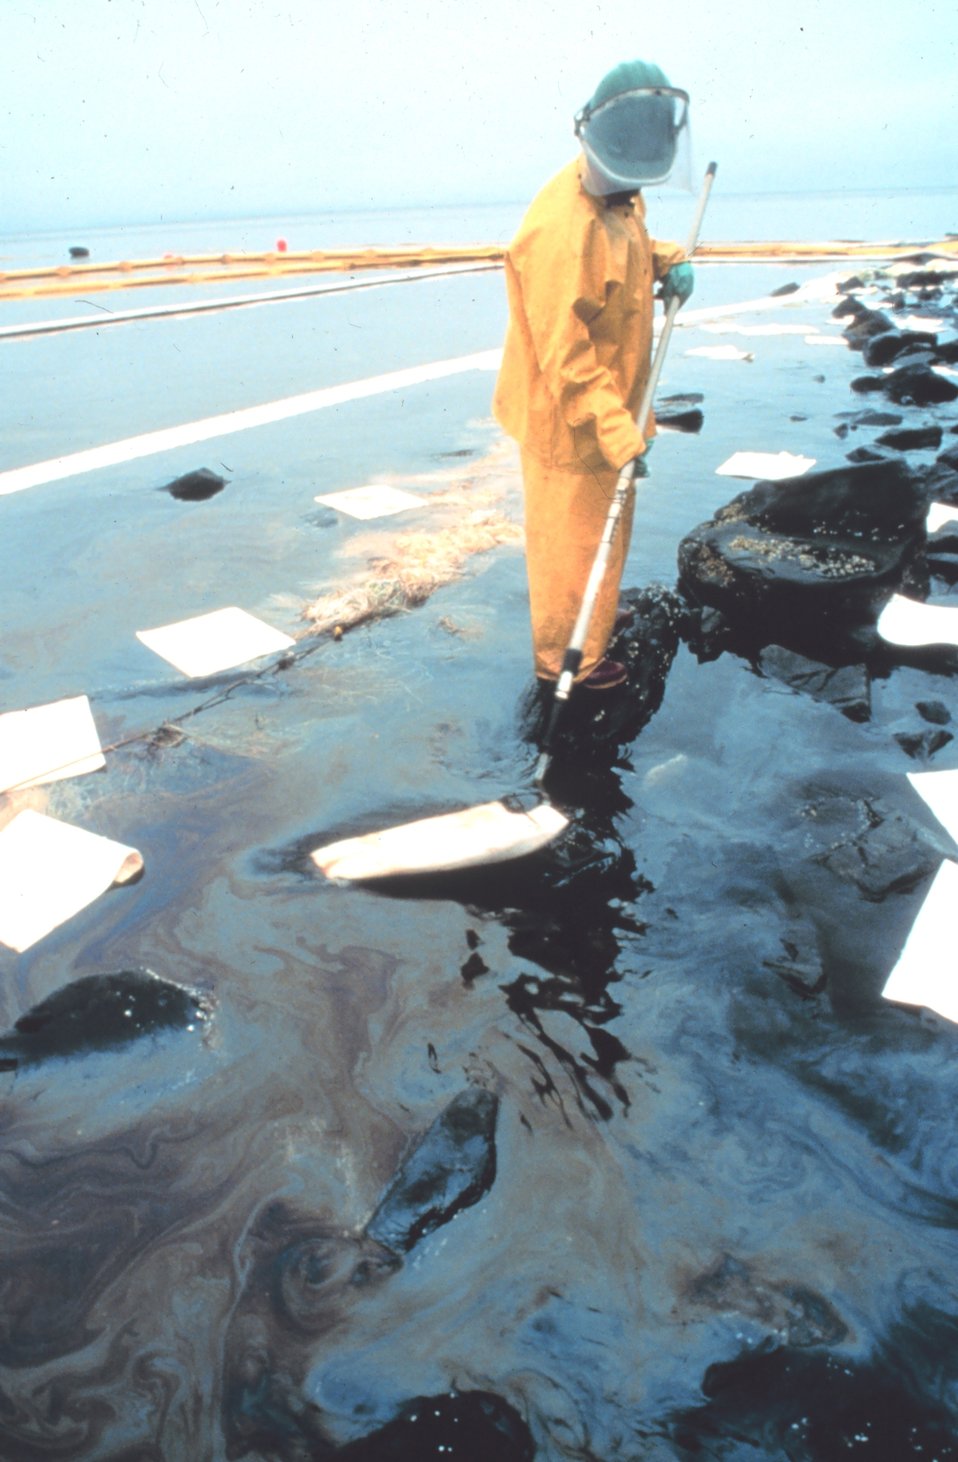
Oil cleanup technique.